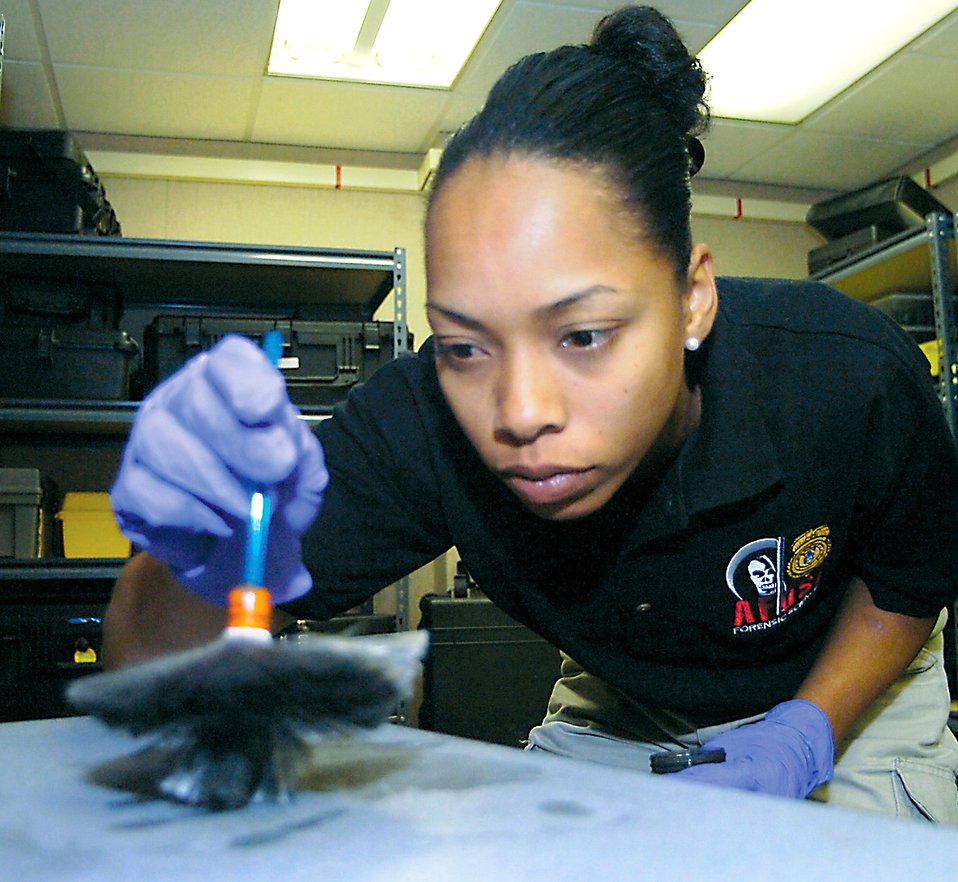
Forensic experts identify keys to crimes

Special Agent Tam Reed dusts a crime scene area for fingerprints. She is a forensic science consultant with the Air Force Office of Special Investigations' 33rd Field Investigations Squadron.